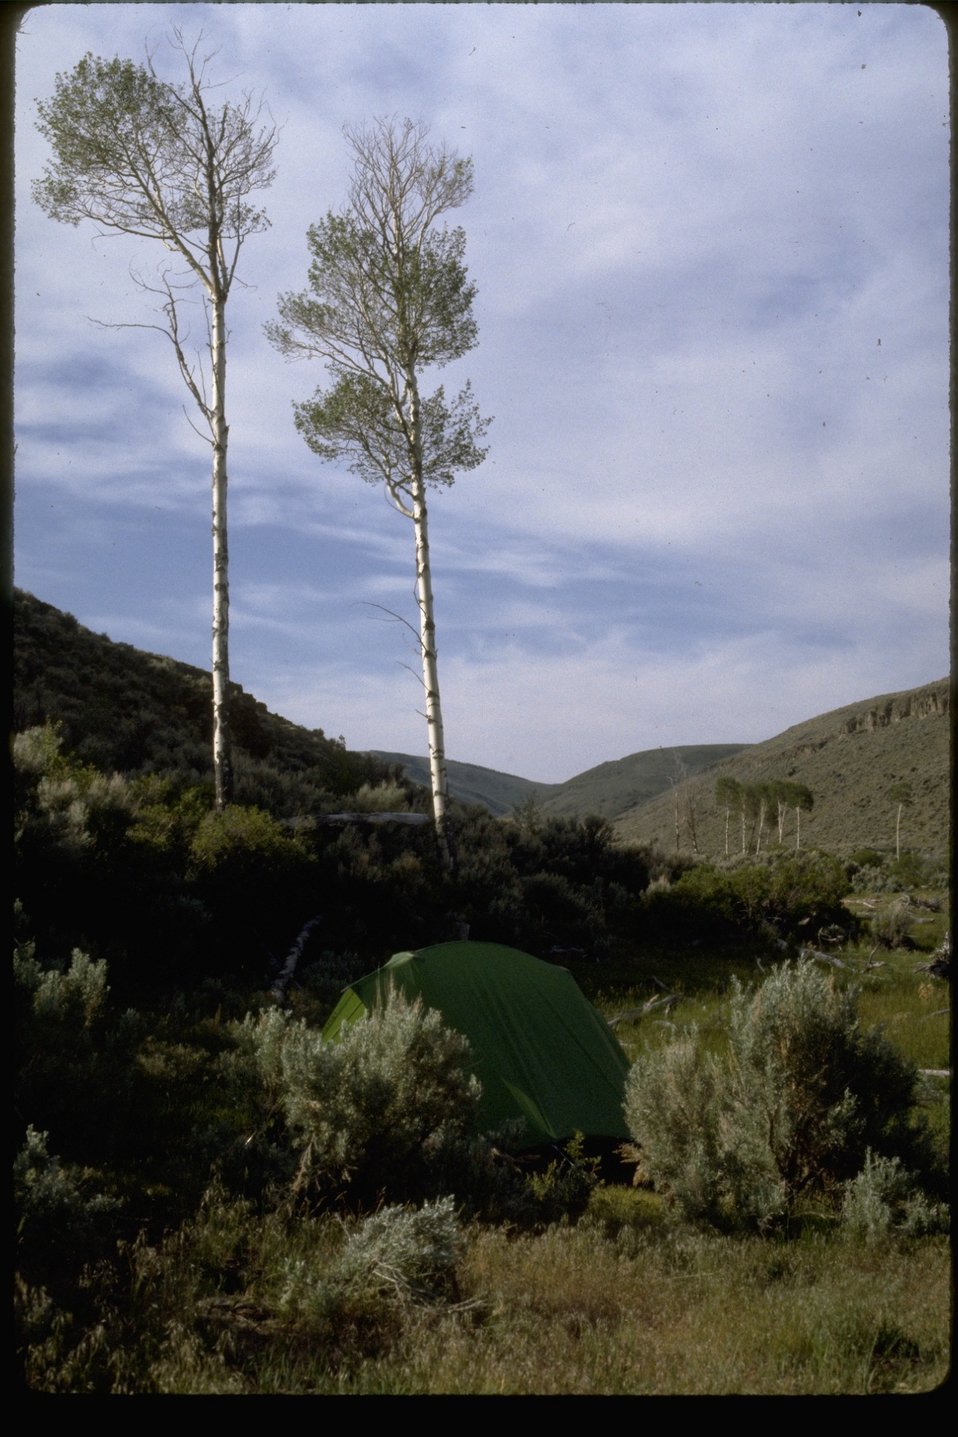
Willow Creek Wilderness Study Area. WSA OR 3-152.